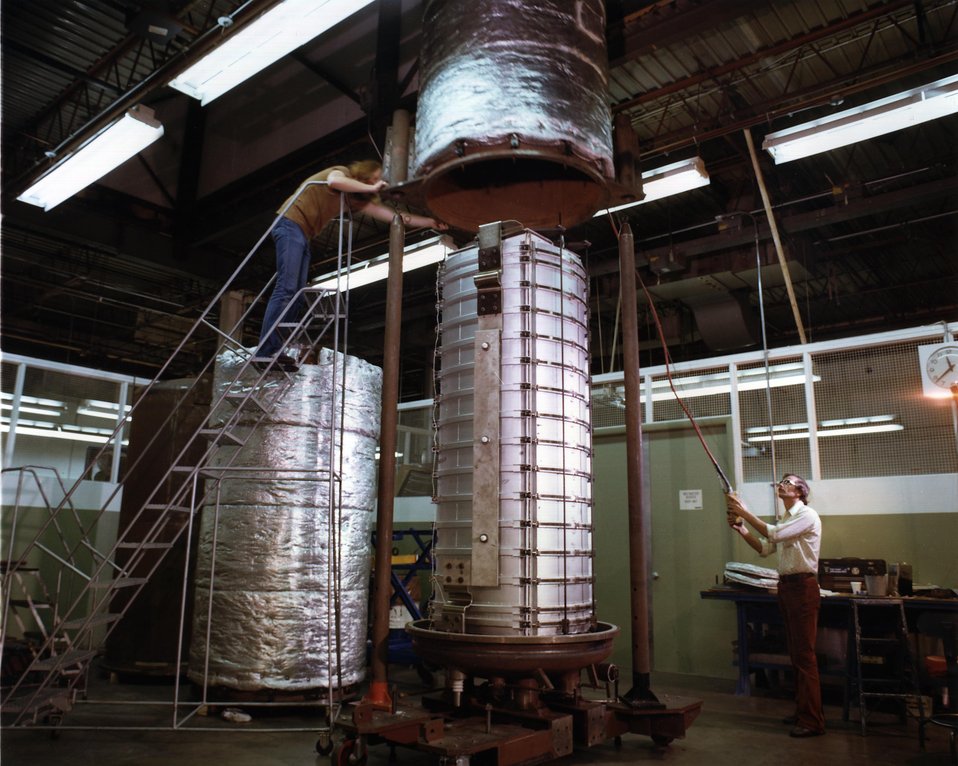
LOADING OF FUEL CELL STACKS PRIOR TO DELIVERY OF THE FIRST STACKS TO THE POWER SECTION PALLET VENDOR.

THE 4.8-MW FUEL CELL POWER PLANT CONTAINS A FUEL PROCESSOR FOR ENRICHING HYDROCARBON FUEL WITH HYDROGEN, A FUEL CELL POWER SECTION IN WHICH THE PROCESSED FUEL AND AIR REACT TO GENERATE DC POWER, AND AN INVERTER IN WHICH THE DC IS CHANGED TO AC. THIS TYPE OF POWER PLANT IS ESPECIALLY SUITED TO URBAN AND OTHER DENSELY POPULATED AREAS BECAUSE IT IS A MODULAR SYSTEM WHICH IS EASY TO TRANSPORT BY TRUCK AND ASSEMBLE IN A SMALL AREA. OTHER ADVANTAGES ARE ITS ALMOST NOISELESS OPERATION, LACK OF POLLUTION, AND ABILITY TO OPERATE WITHOUT LARGE QUANTITIES OF WATER. THE 4.8-MW FUEL CELL POWER PLANT IS BEING INSTALLED IN NEW YORK CITY AND WILL EVENTUALLY BE INTEGRATED INTO THE CONSOLIDATED EDISON UTILITY NETWORK.